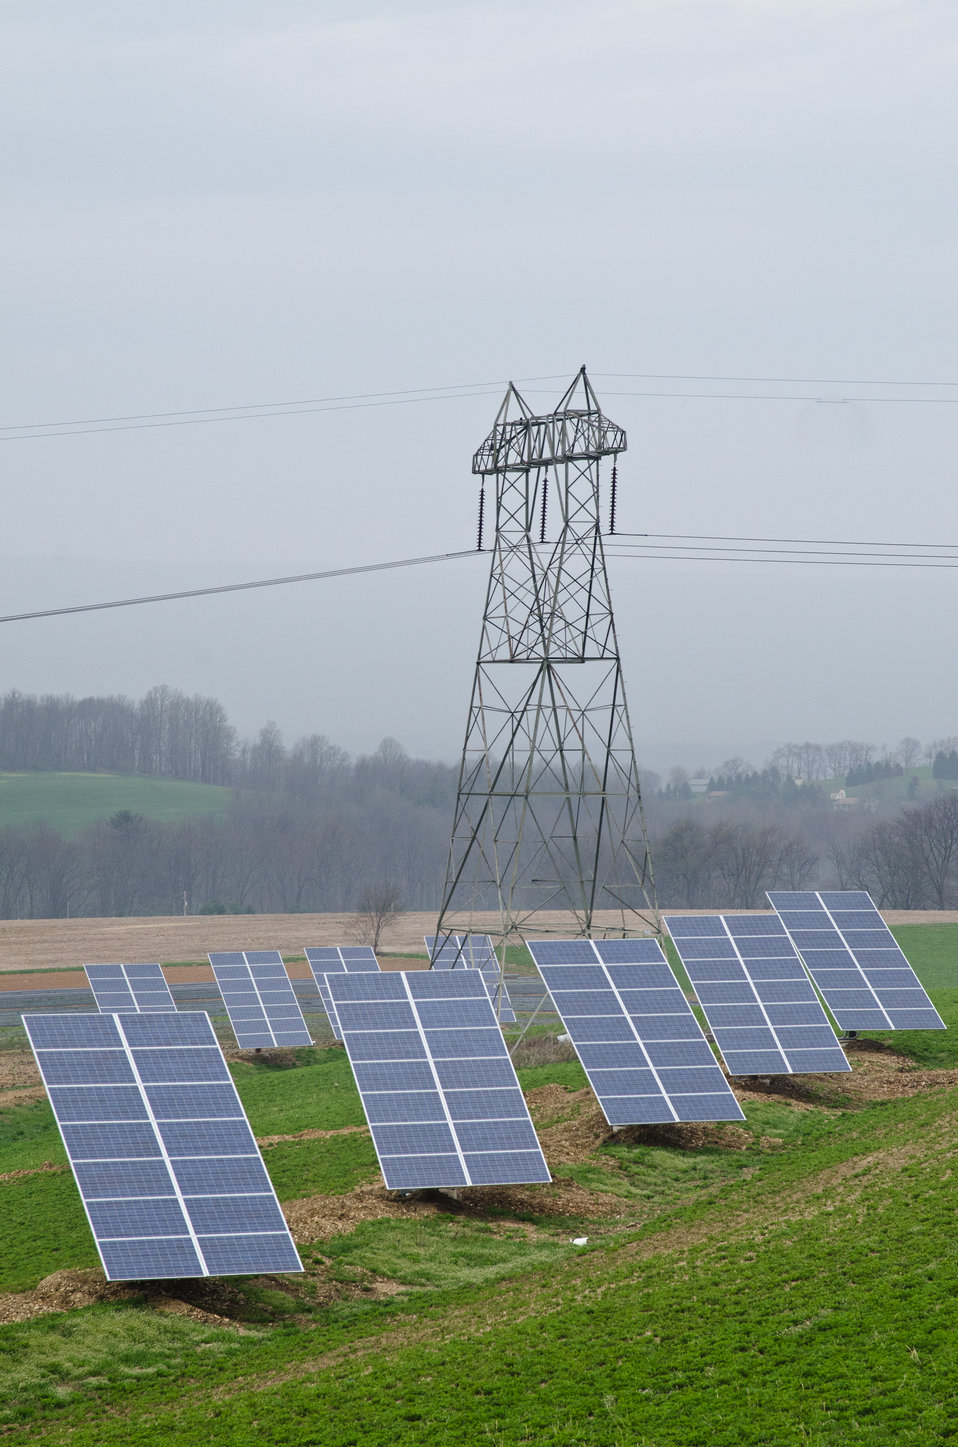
Heidel Hollow Farms, on Wednesday, April 20, 2011, has been a family owned farm since 1852 and is currently an 1,800 acre operation in Germansville, PA. Led by David Fink, President of Heidel Hollow Farms, they mainly produce and compact hay for exportand grow produce on 300 acres for local. With the financial help of the U.S. Department of Agriculture (USDA) an 896 panel solar array was recently installed on non farmable diversion ditches. Rated at 200 kilowatts, they project 240 megawatts of electricity to be produced each year, providing up to 70% of the farms electrical needs. Additionally, USDA financial assistance made it possible to replace the hay compactor’s diesel engines with clean low-maintenance, low operating cost electric motors to power the compactor's hydraulic system. The compactor increases the density of baled hay by two and half times for more efficient shipping to overseas customers.